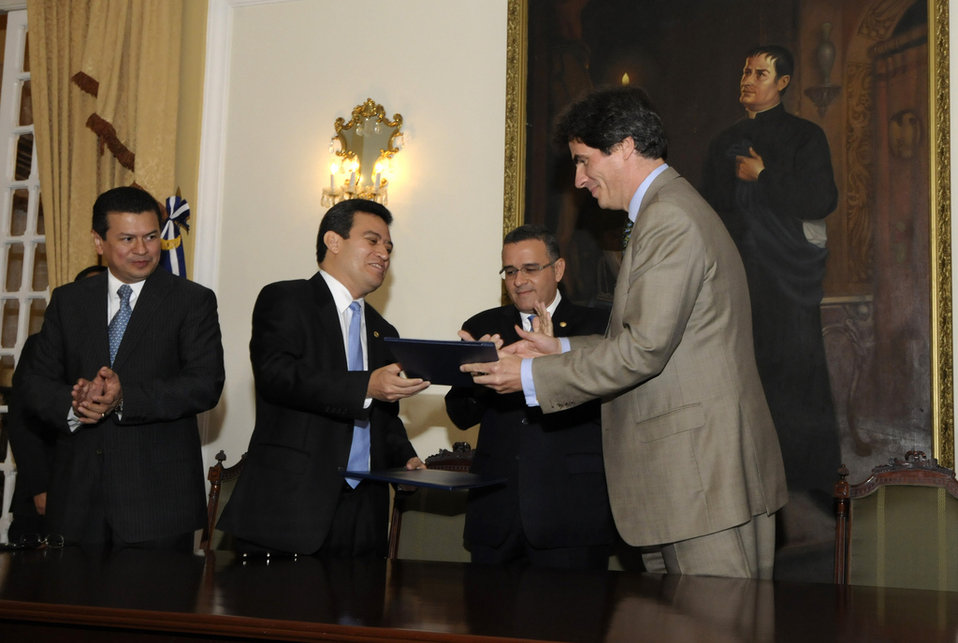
Assistant Secretary Fernandez and Salvadoran Presidential Technical Secretary Segovia Exchange Documents

Assistant Secretary of State for Economic, Energy and Business Affairs Jose Fernandez and Salvadoran Presidential Technical Secretary Alexander Segovia exchange documents after signing the Joint Statement of Principles that will formally implement the Partnership for Growth initiative at the Presidential Palace in San Salvador, El Salvador, on November 3, 2011.